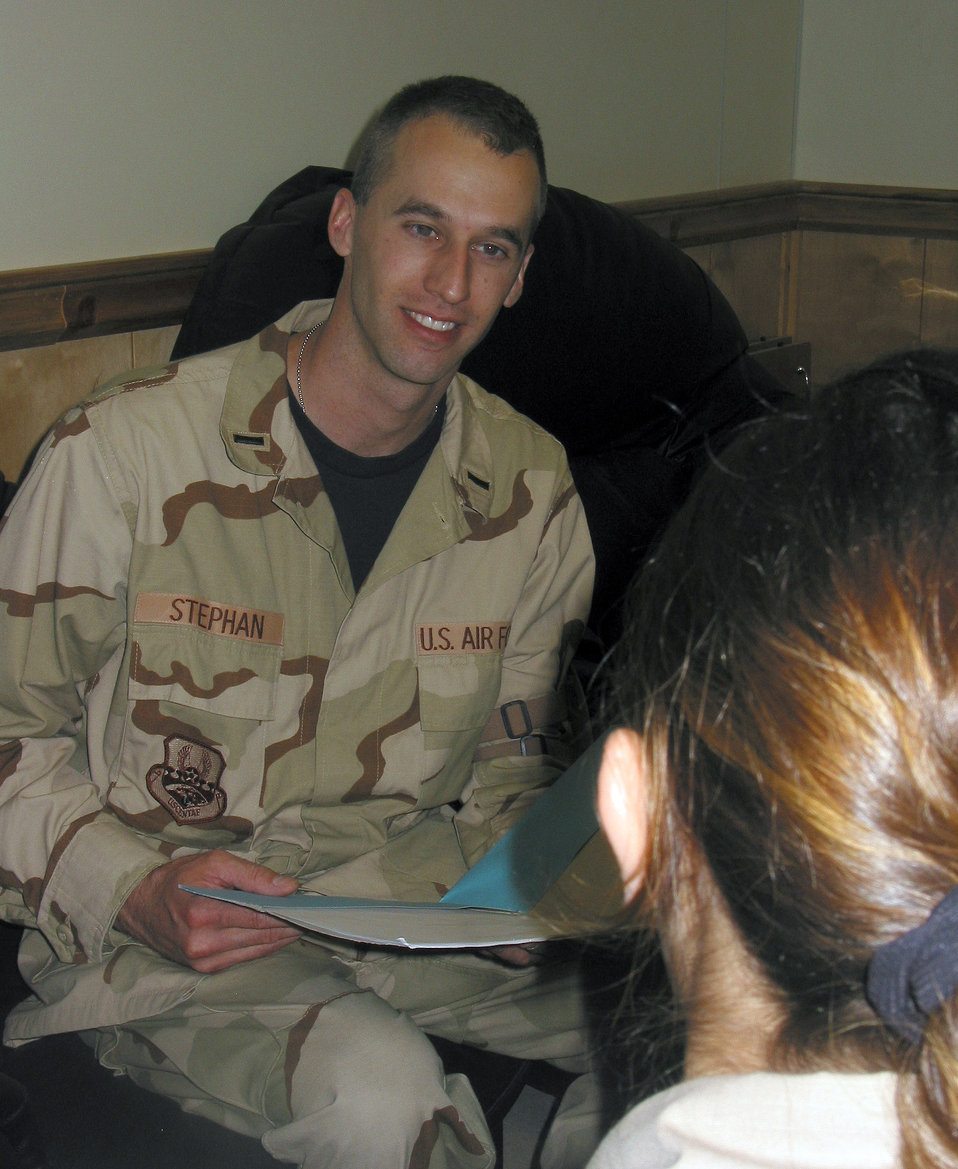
SAPR deploys

MANAS AIR BASE, Kyrgyzstan (AFPN) -- Manas Sexual Assault Response Coordinator 1st Lt. Charles Stephan discusses the program with a member of the 376 AEW staff. Lieutenant Stephan is the first SARC to deploy in the Air Force.